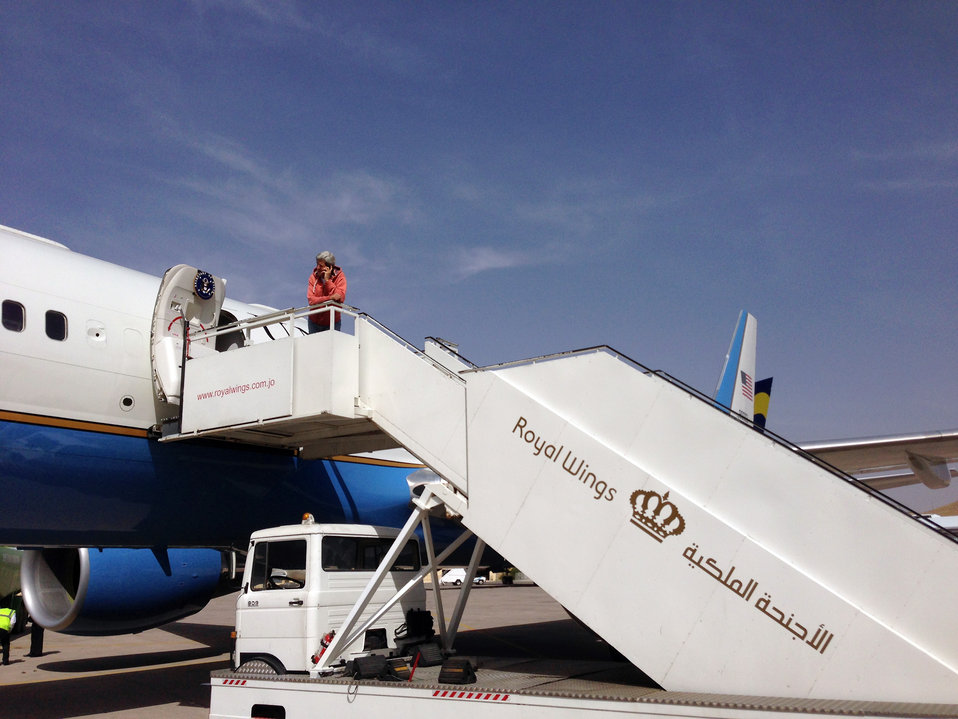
Secretary Kerry Makes a Phone Call

U.S. Secretary of State John Kerry makes a phone call while his plane refuels in Amman, Jordan, on May 24, 2013.